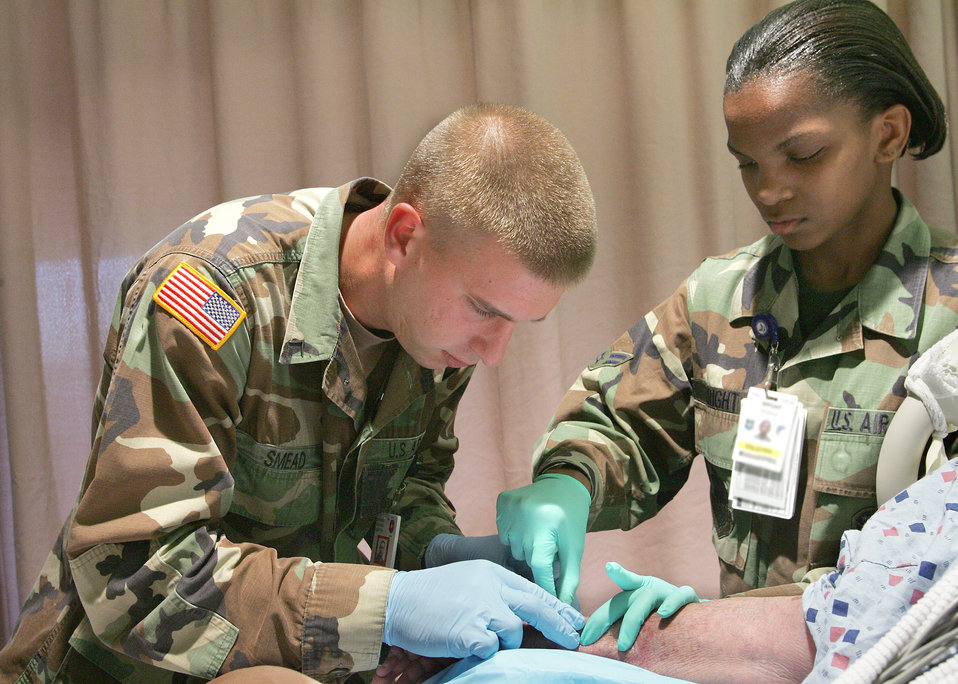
Practice makes perfect

Airman 1st Class Keoshia Bright shows Army Private 2nd Class Paul Smead the proper technique while inserting an intravenous catheter into retired Chief Master Sgt. Joshua Ruderman's arm Sept. 27 at Wilford Hall Medical Center, Lackland Air Force Base, Texas. Airman Bright is with the 750th Medical Operations Squadron. Private Smead is training at Wilford Hall to become a licensed vocational nurse.